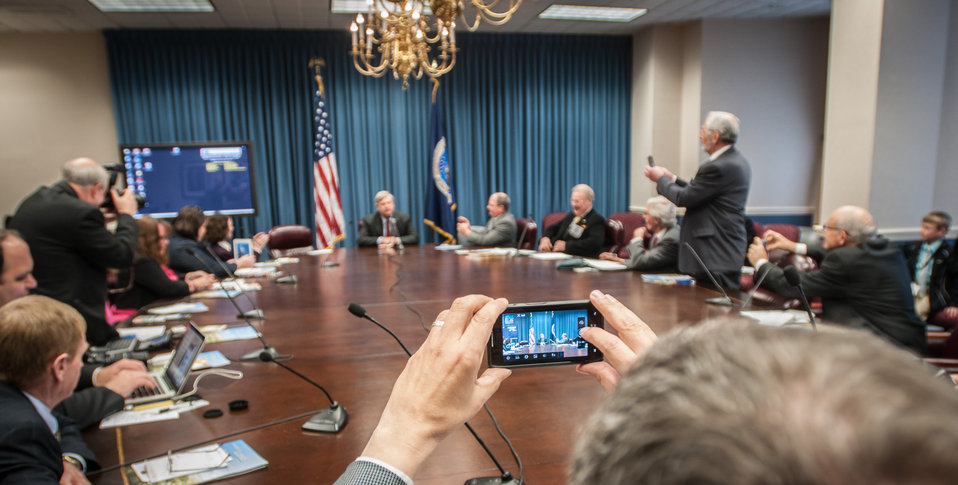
Farm broadcasters take notes, photos and video of Agriculture Secretary Tom Vilsack during a meeting at the U.S. Department of Agriculture (USDA) on Tuesday, May 14, 2013, in Washington, D.C.